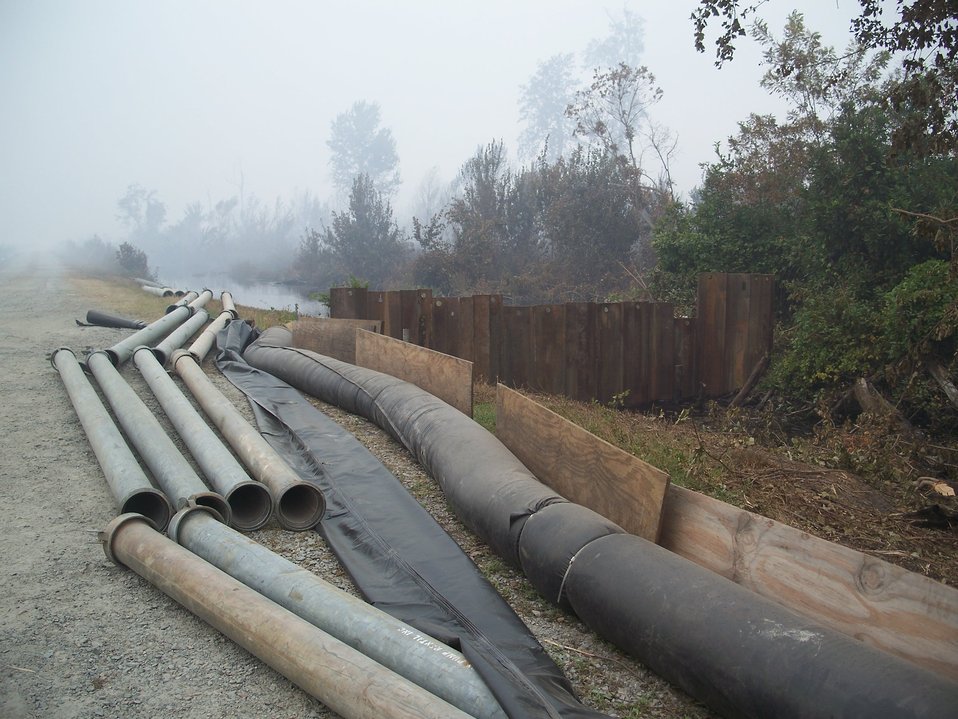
Plumbing Great Dismal Swamp

Suffolk, VA, August 2011: Pipes await fitting for an operation to flood the peat fire burning in the Lateral West Fire on Great Dismal Swamp National Wildlife Refuge. Water from Lake Drummond will be used to flood ditches in the swamp.